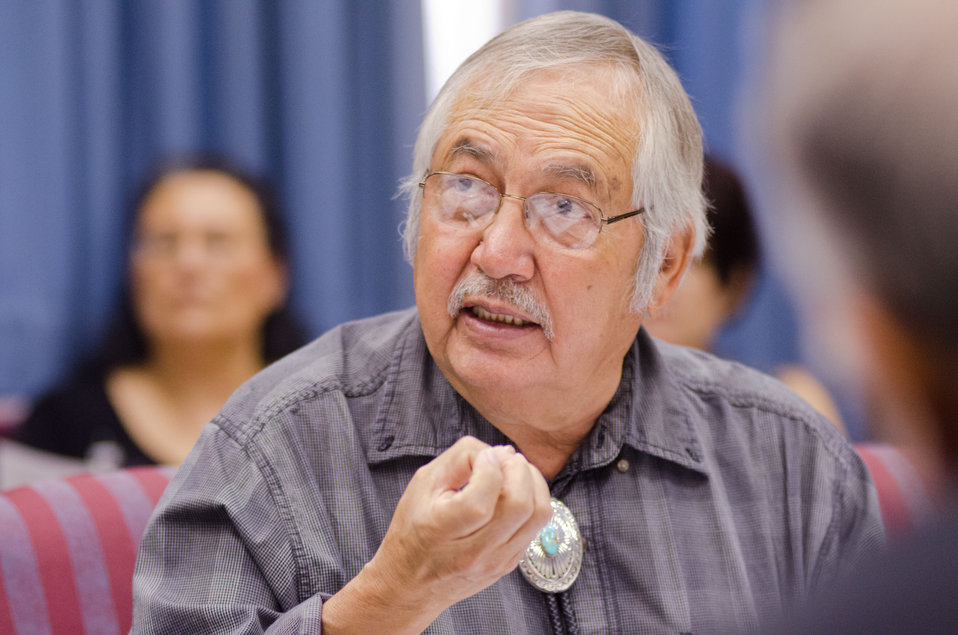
Rancher Gilbert Harrison of the Navajo Nation, in Shiprock, N.M., during the first administrative/training meeting of the U.S. Department of Agriculture's (USDA) Council for Native American Farming and Ranching (CNAFR) is held on Monday, Aug. 13, 2012 at the USDA headquarters Whitten Building, in Washington, D.C. CNAFR was created to advise the Secretary on ways to eliminate barriers to participation for Native American Farmers and Ranchers in USDA programs. The Council was established as part of the Keepseagle settlement, and is conducted under the oversight of USDA's Office of Tribal Relations, which is part of the Office of the Secretary of Agriculture. The Director of Tribal Relations Joanna Mounce Stancil serves as Designated Federal Official (DFO) for the Council.